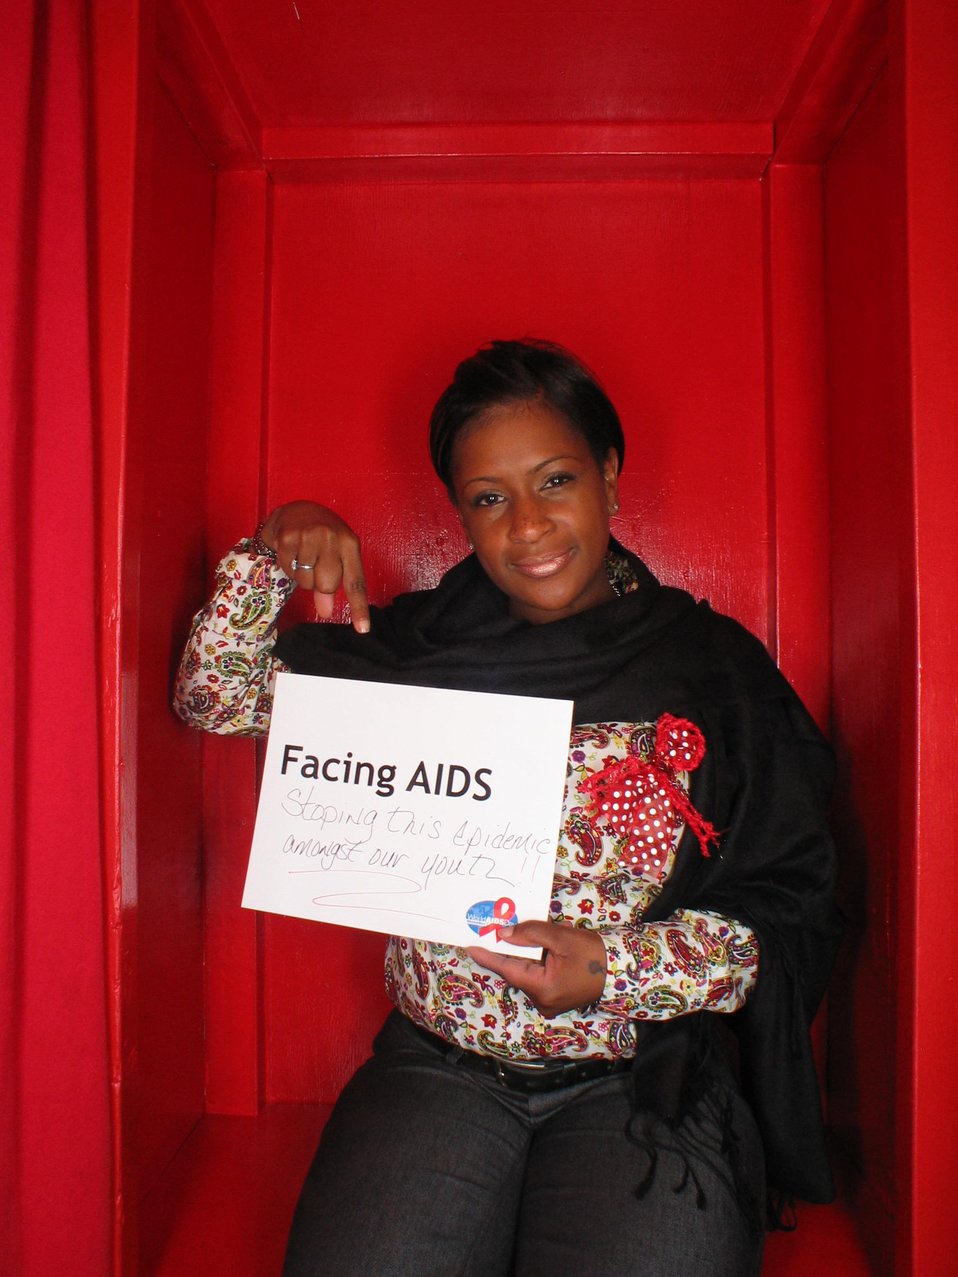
Facing AIDS stoping this epidemic ... our youth!!!